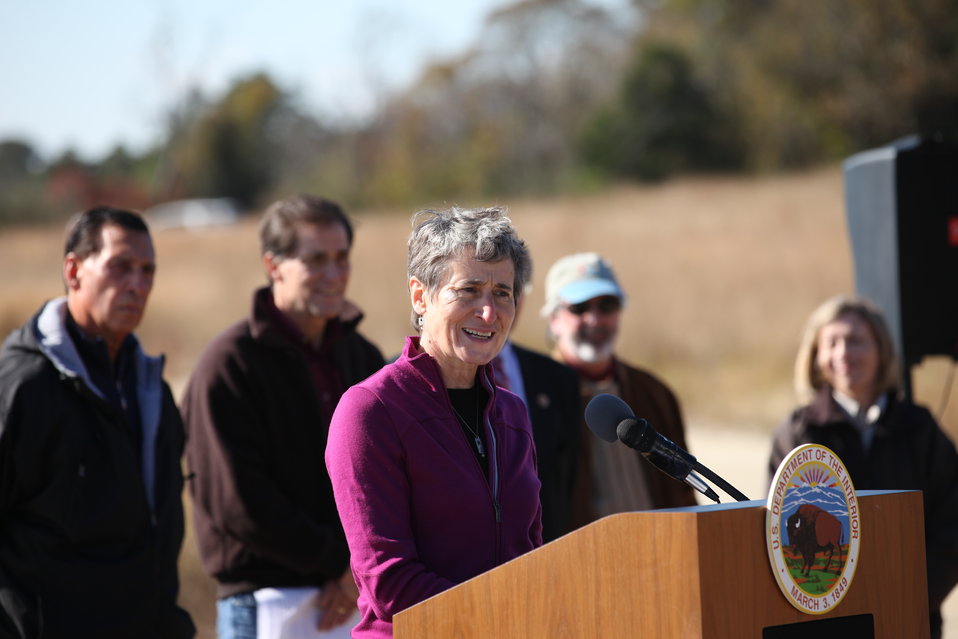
Secretary Sally Jewell speaking at Edwin B. Forsythe National Wildlife Refuge

U.S. Department of the Interior Secretary Sally Jewell speaking at Edwin B. Forsythe National Wildlife Refuge to announce Hurricane Sandy resiliency funding.